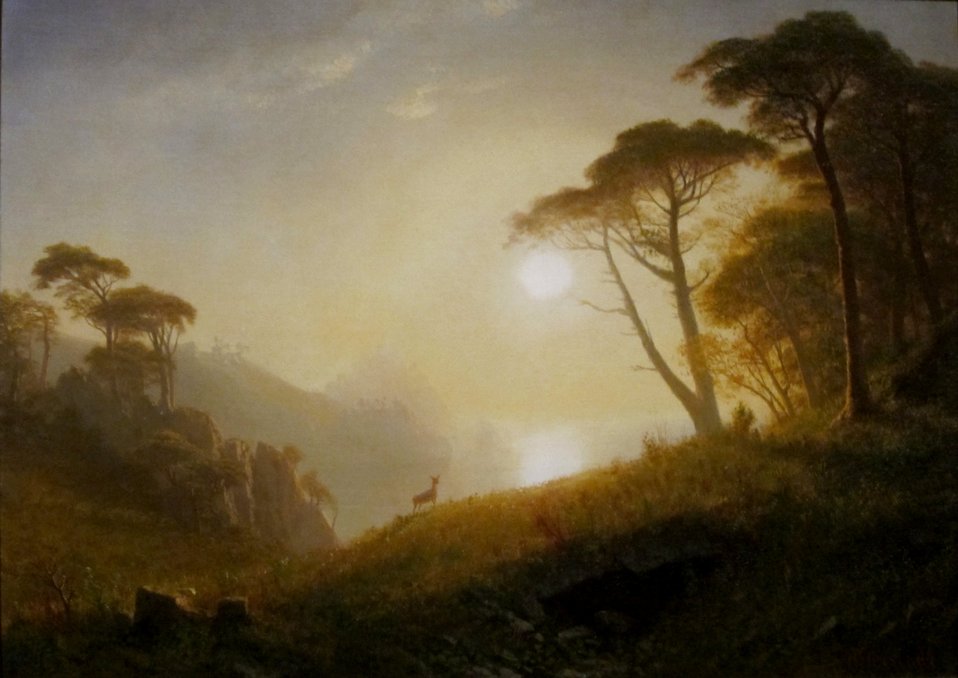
'Scene in Yosemite Valley', oil on canvas painting by Albert Bierstadt, c. 1864-74, Dayton Art Institute